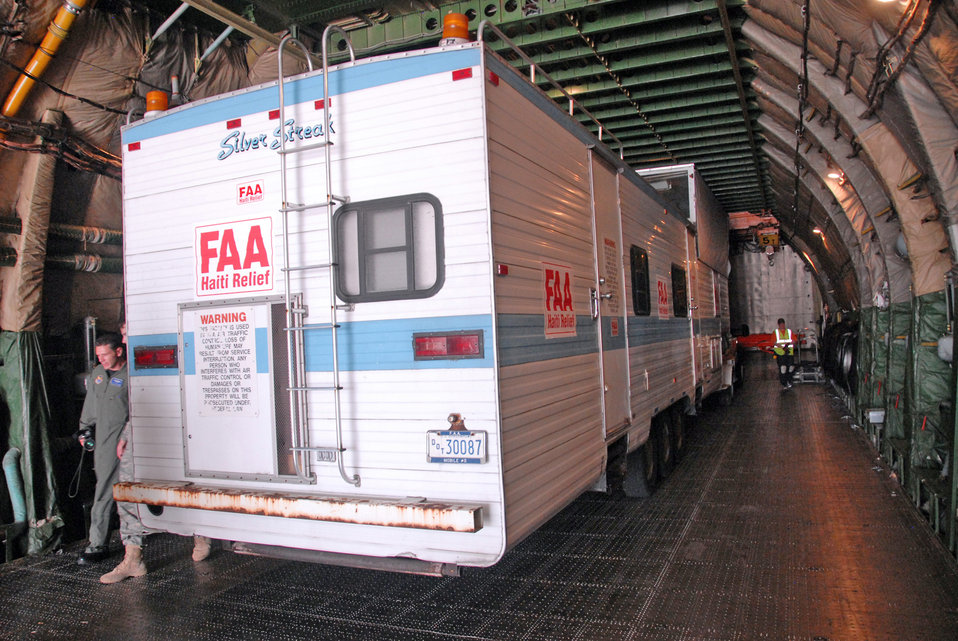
Air Force, FAA use Russian aircraft to move mobile air traffic control tower

A mobile air traffic control tower is loaded onto a Russian Antonov An-124 cargo plane at Homestead Air Reserve Base, Fla., Jan. 21, 2010. The mobile air traffic control tower will increase the efficiency of aid being delivered to earthquake victims in Haiti.